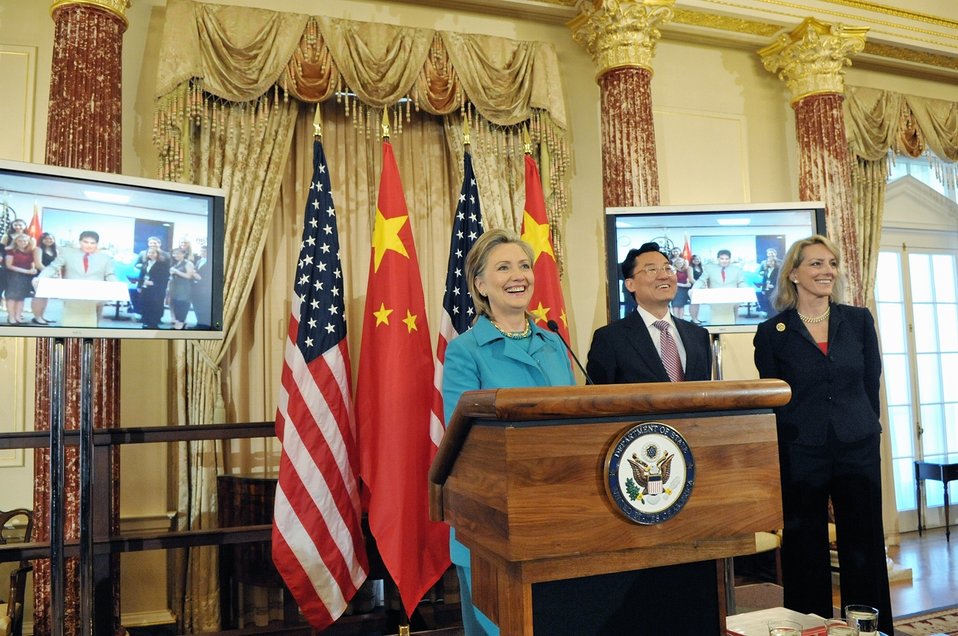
Secretary Clinton Celebrates Opening of Shanghai Expo U.S.A. Pavilion

U.S. Secretary of State Hillary Rodham Clinton celebrates the opening of the U.S.A. Pavilion at the 2010 Shanghai Expo via a digital video conference at a reception hosted by the Office for Global Partnership Initiatives at the Department of State in Washington, DC, April 30, 2010.